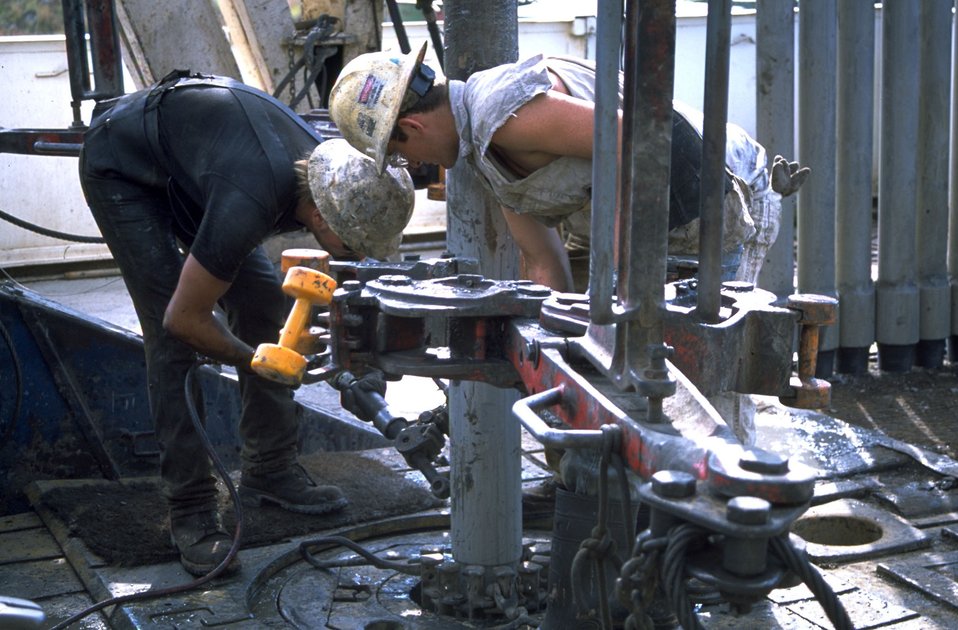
Roughnecks working on drilling rig platform